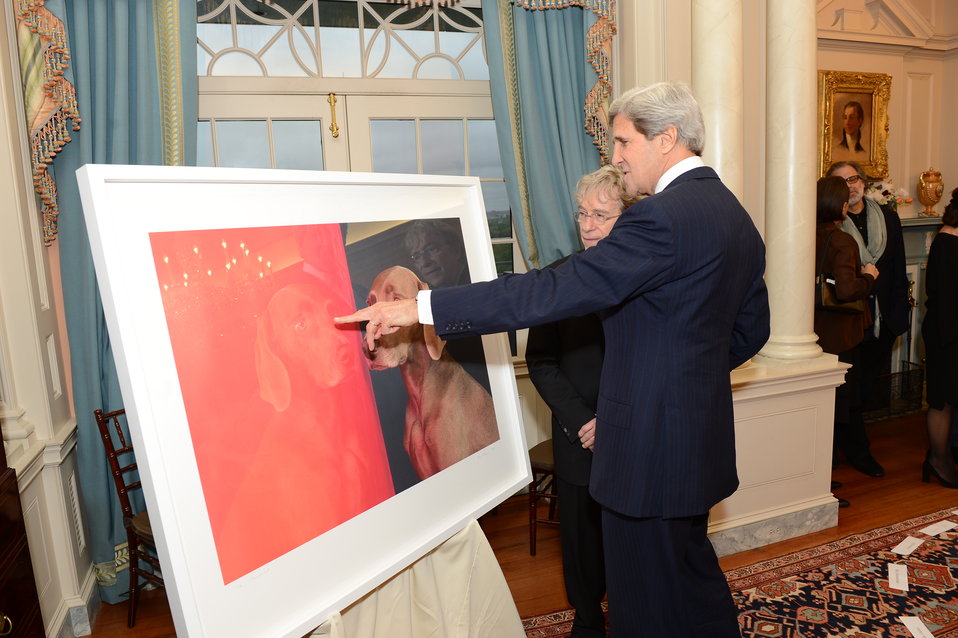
Secretary Kerry Views a Work of Art

U.S. Secretary of State John Kerry views a work of art at the Annual Foundation for Arts and Preservation in Embassies (FAPE) dinner at the U.S. Department of State in Washington, D.C., on April 29, 2013.